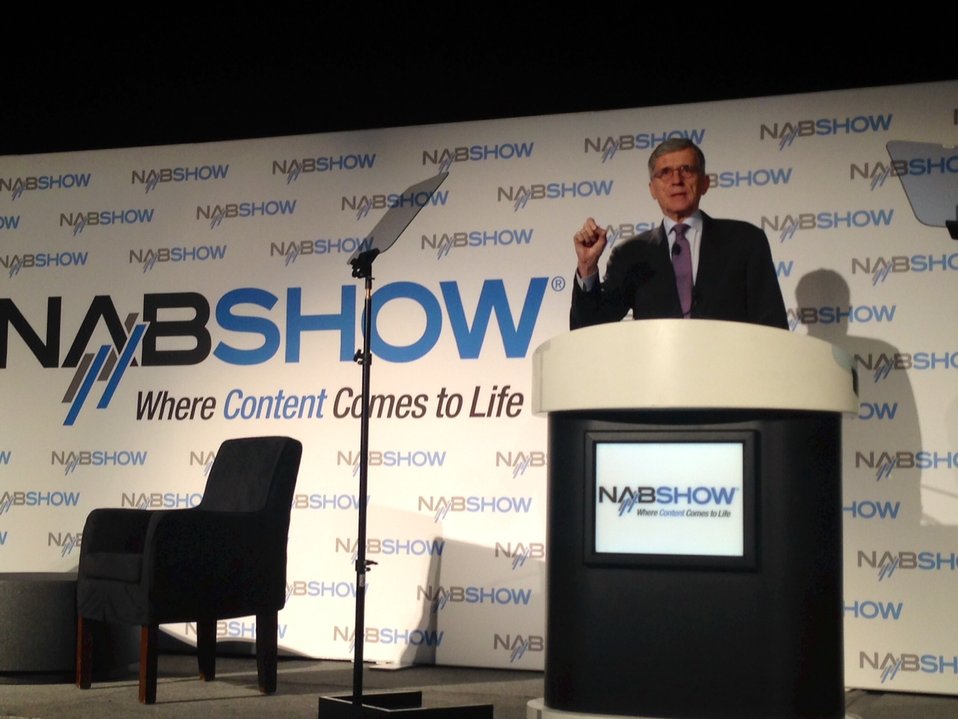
4.8.2014 NAB Show

FCC Chairman Tom Wheeler speaking at NAB Show 2014.